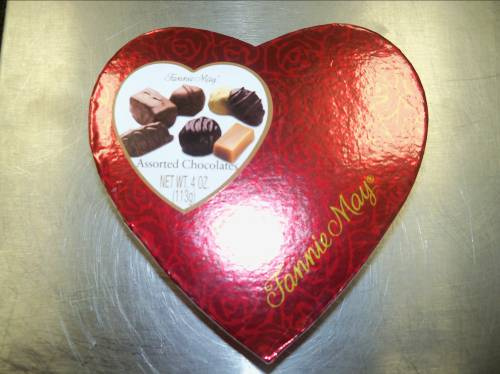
RECALLED - Assorted Chocolates

February 19, 2013 – Product Recall – Fannie May Issues A Voluntary Recall Of Its 4.0 Oz. Heart-shaped Box Of Assorted Chocolates Due To Undeclared Peanuts.